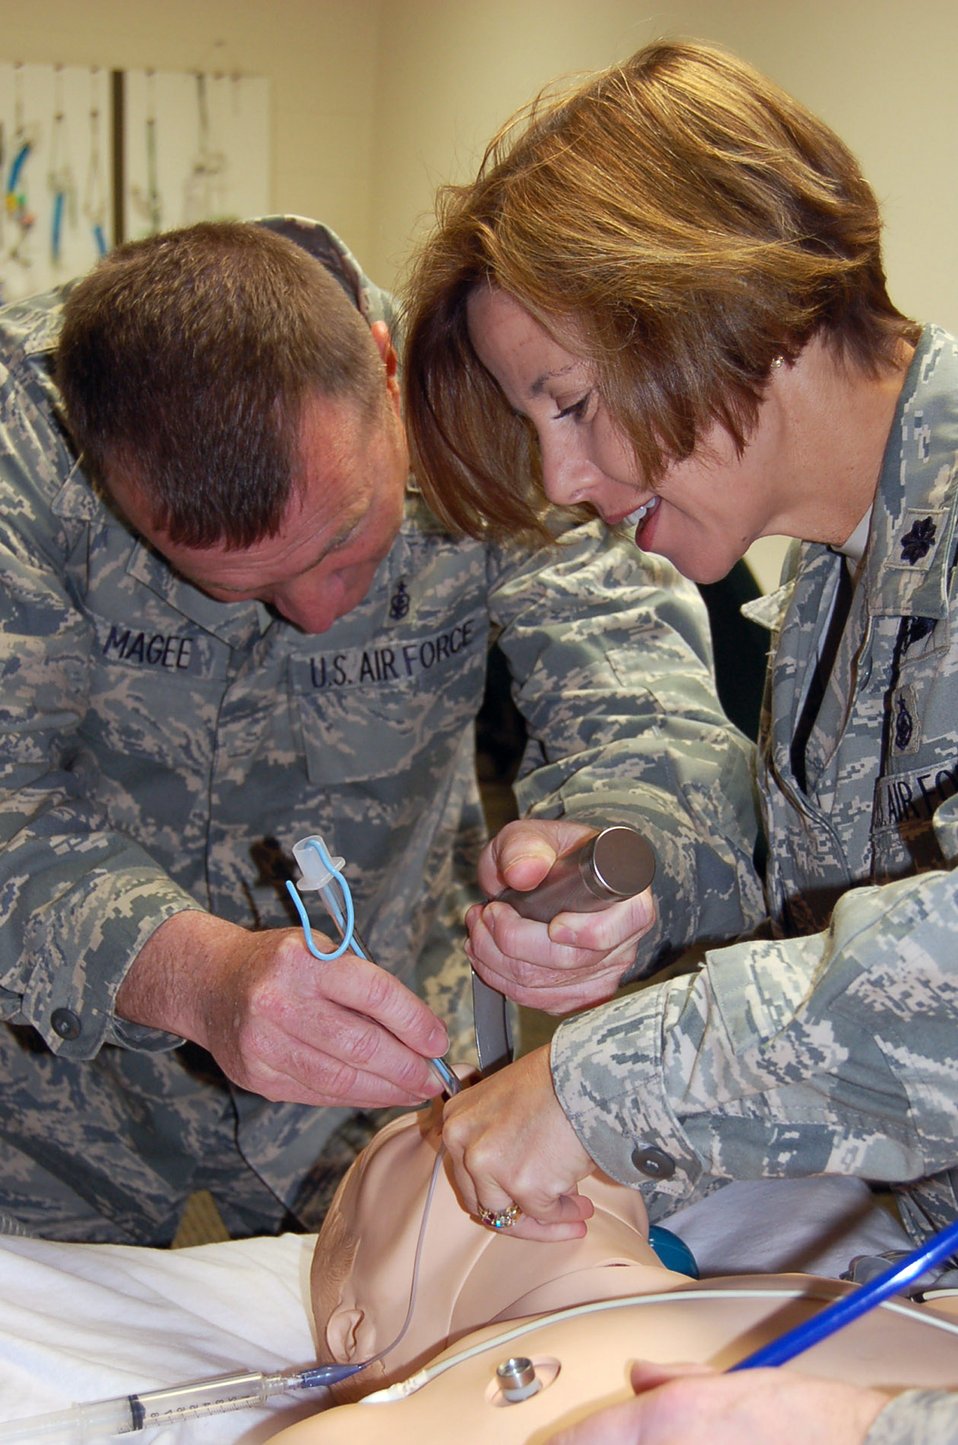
Readying the strategic reserve

Lt. Col. Holly Ortega, right, instructs Maj. William Magee on how to open the airway of a simulated patient as part of a Sustainment of Trauma and Readiness Skills course. Colonel Oretega is an individual mobilization augmentee to the Education and Training Division chief assigned to the 59th Inpatient Operations Group at Lackland AIr Force Base.